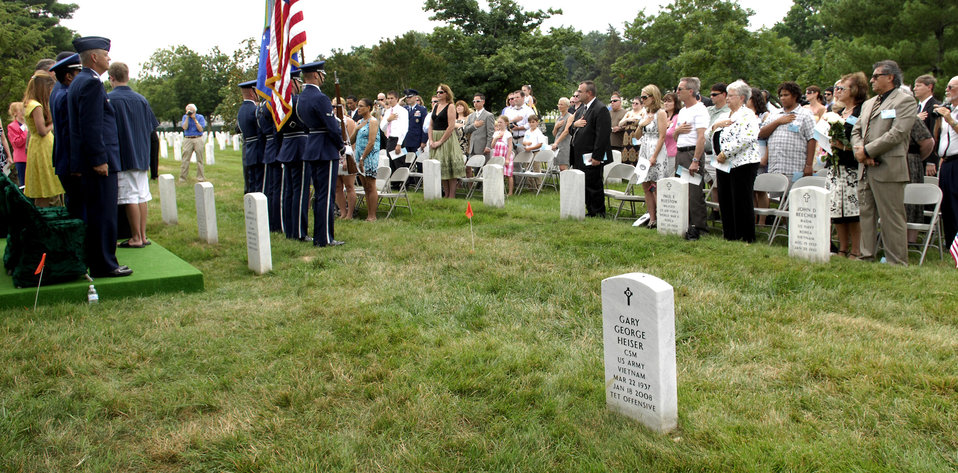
Remembrance

Guests recite the Pledge of Allegiance during a remembrance ceremony, June 25, 2011, at Arlington National Cemetery, Va., to mark the 15th anniversary since the Khobar Towers bombing. Nineteen Airmen were killed in the terrorist bombing, June 25, 1996, at Dhahran Air Base, Saudi Arabia.